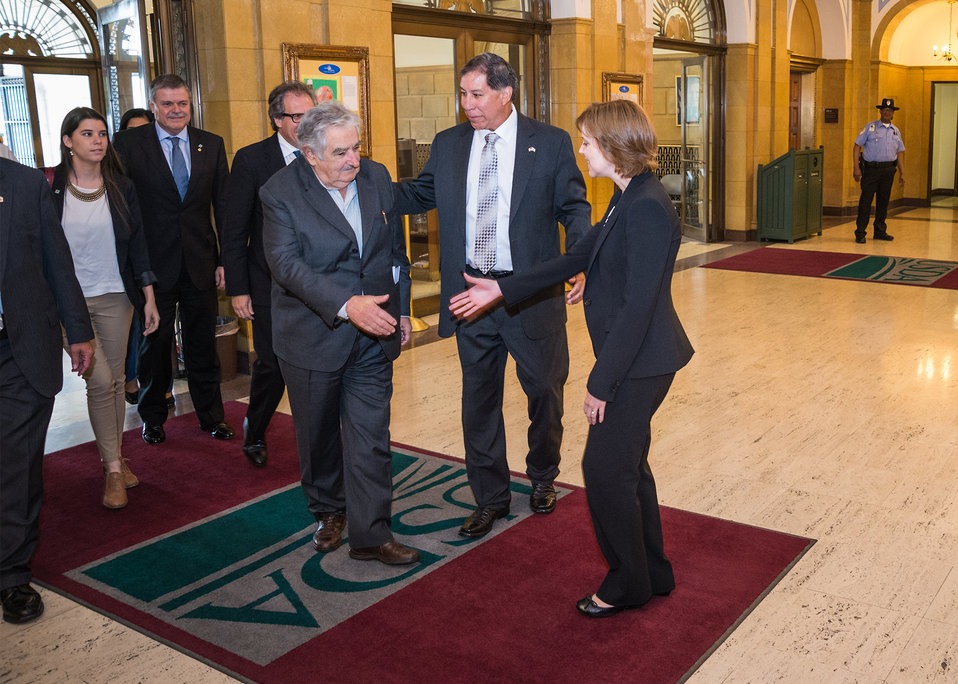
U.S. Department of Agriculture (USDA) Marketing and Regulatory Programs (MRP) Under Secretary Ed Avalos and USDA Farm and Foreign Agricultural Services (FFAS) Deputy Under Secretary Darci Vetter greet Uruguay President Jose Mujica prior a meeting with Agriculture Secretary Tom Vilsack on agriculture issues at USDA in Washington, D.C. on Wednesday, May 14, 2014.